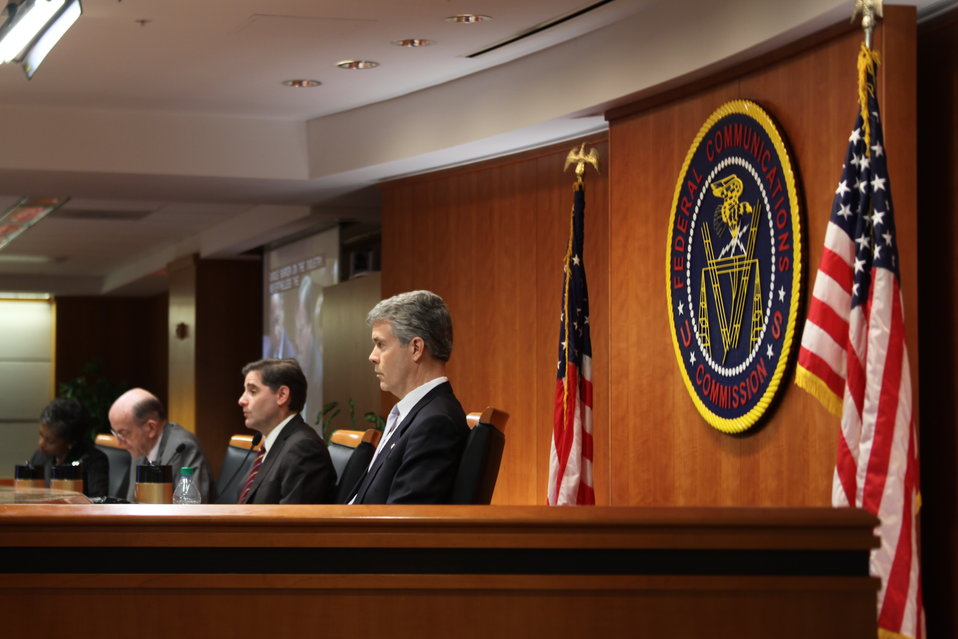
7/12/2011 Open Commission Meeting

Commissioner Mignon L. Clyburn, Commissioner Michael J. Copps, Chairman Julius Genachowski, and Commissioner Robert M. McDowell at the July 2011 Open Commission Meeting